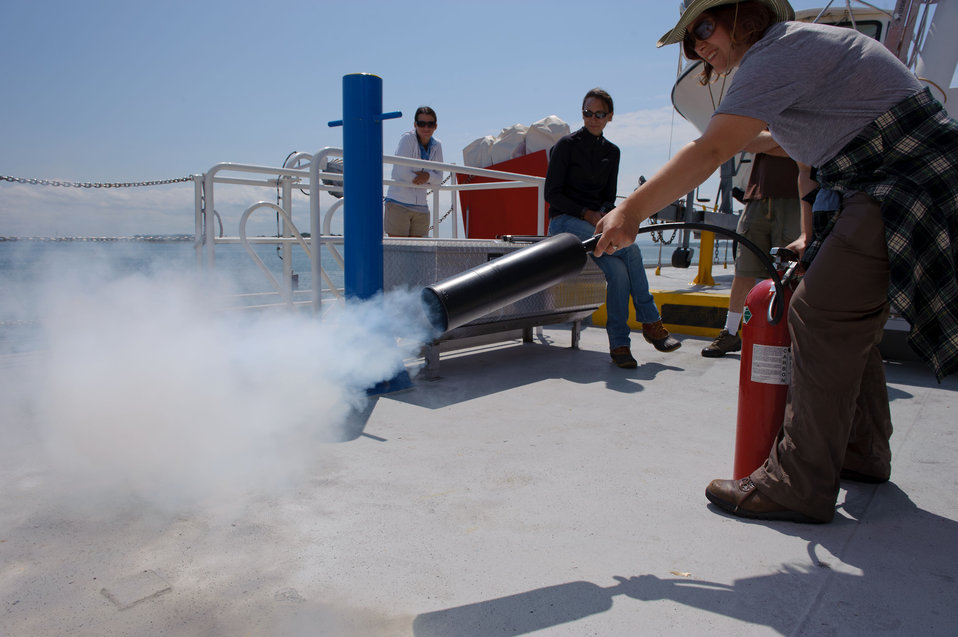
August 5, 2011 Practicing safety on the OSV Bold